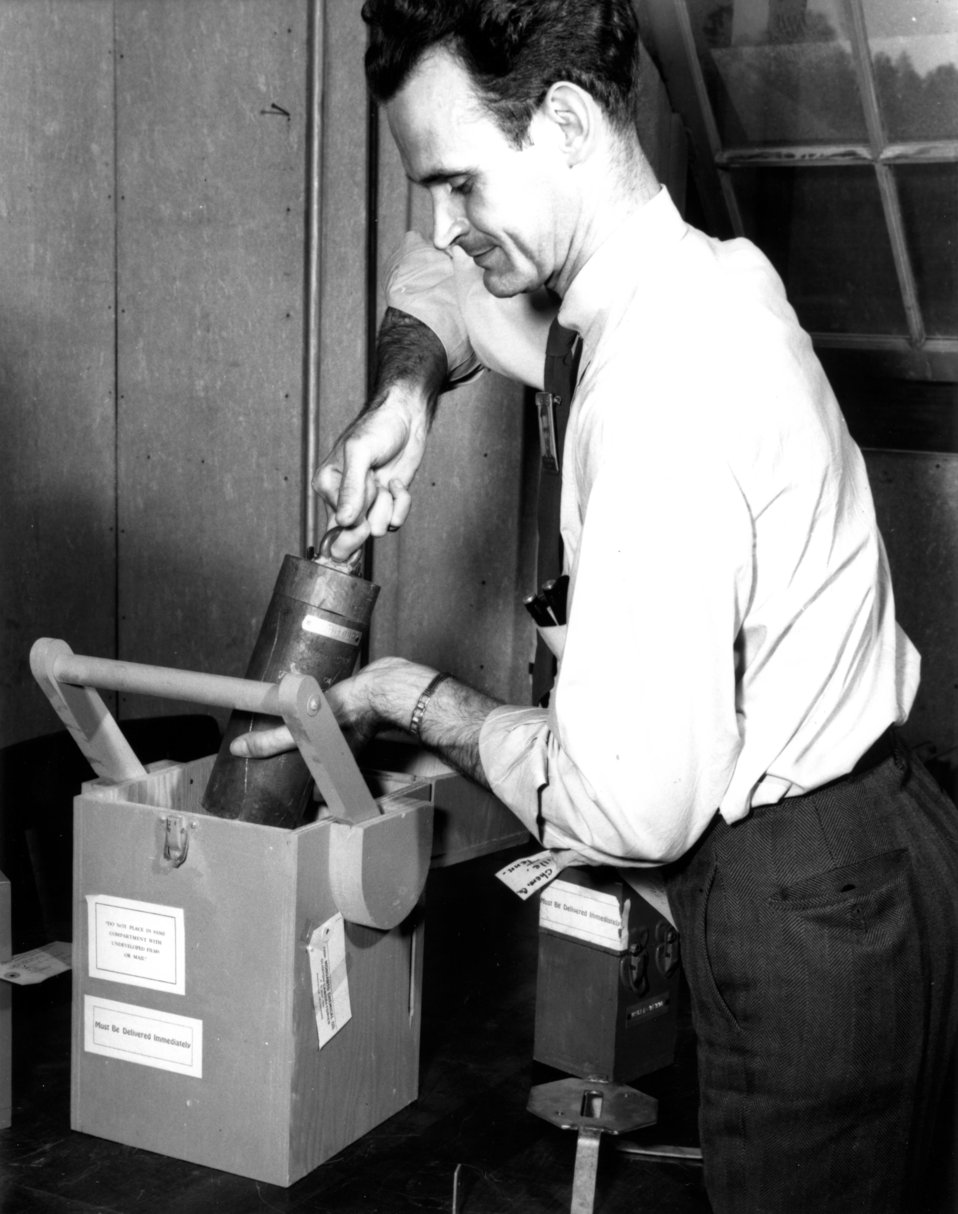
X-10 at Oak Ridge